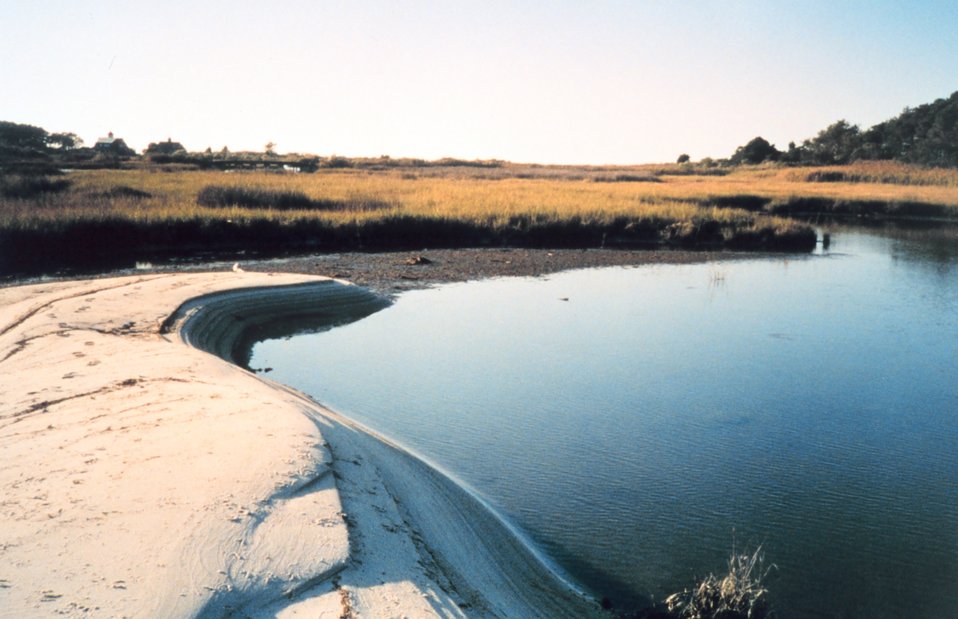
A sand bar in the marsh at Port Isobel.